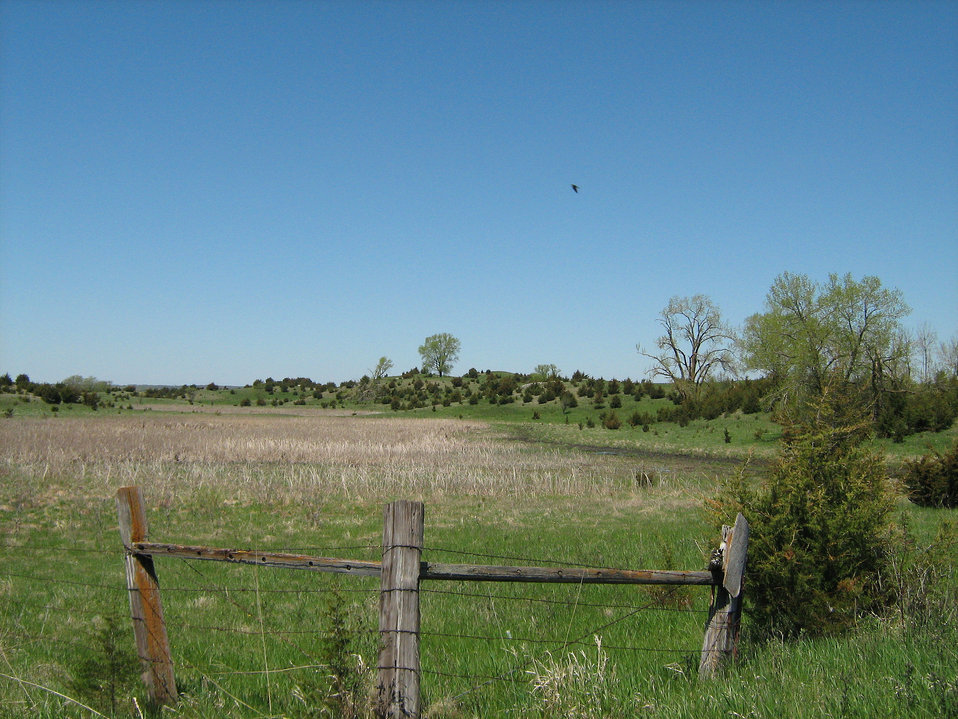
Rested pasture before tree removal in 2011.